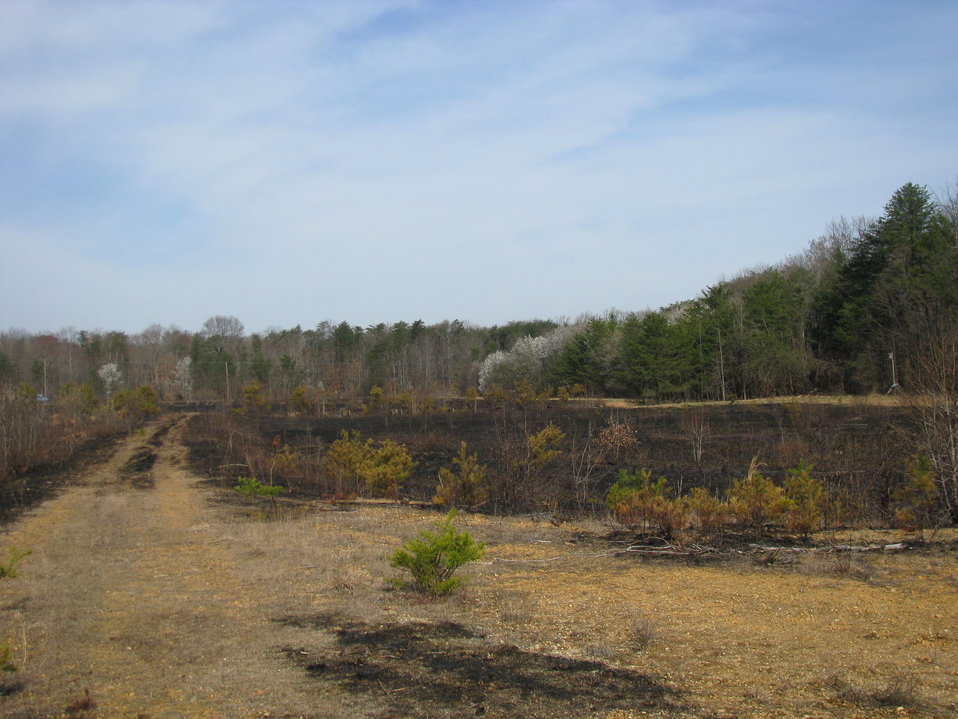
Grassland Field after Controlled Burn

Laurel, Maryland, April 15, 2012: The day after a controlled burn shows the burn was a success. The burn, at Patuxent Research Refuge, was to maintain native grasslands, remove woody vegetation, and control invasive species such as Korean Lespedeza.